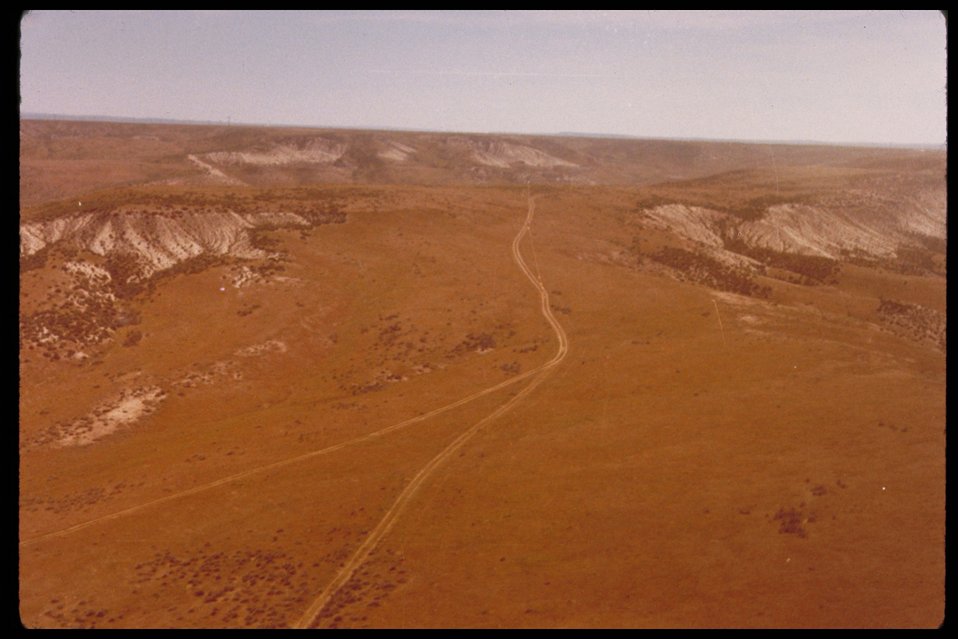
Oregon Trail South east of Three Island Lower Snake River District